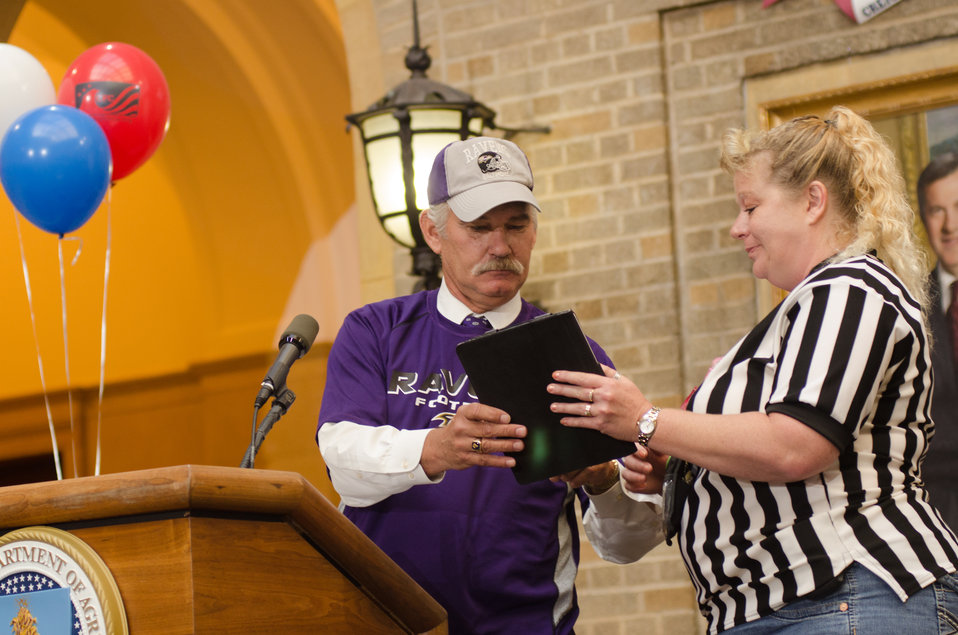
U.S. Department of Agriculture (USDA) Farm and Foreign Agricultural Services Under Secretary and Vice Chair of the USDA CFC Campaign Michael T. Scuse makes the first eGiving pledge to the 2013 USDA Combined Federal Campaign during the opening ceremony and fund raising event on Tuesday, Sept 17, 2013 in the Whitten Building, U.S. Department of Agriculture (USDA), Washington, D.C. He also announced the Coin Wars Challenge where mission areas had containers for coin donations. Pennies were worth positive points and all other coins had negative point values based on their denomination. Those with a competitive nature, could lower the points score of another organization by loading their container with silver coins, and their own organization with pennies. Other event activities attracted employees on personal time to participate in fund raising activities that generated donations and donation registrations that will help support charities. The Combined Federal Campaign (CFC) is the largest and most successful workplace charitable giving drive in the world. CFC is the only authorized charitable organization solicitation of Federal employees in their workplaces. CFC is structured to support and to promote philanthropy through a voluntary program that is cost-efficient and effective in providing all Federal employees the opportunity to impact the CFC charitable interest of their choosing. For more information about CFC, please see www.usda.gov/wps/portal/usda/usdahome?navid=USDA CFC USDA Photo by Lance Cheung.